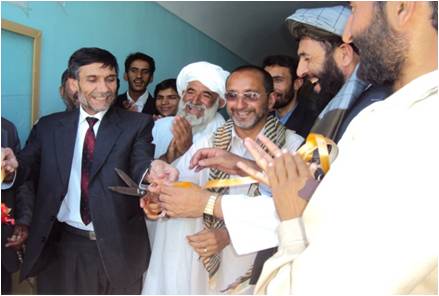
School Days